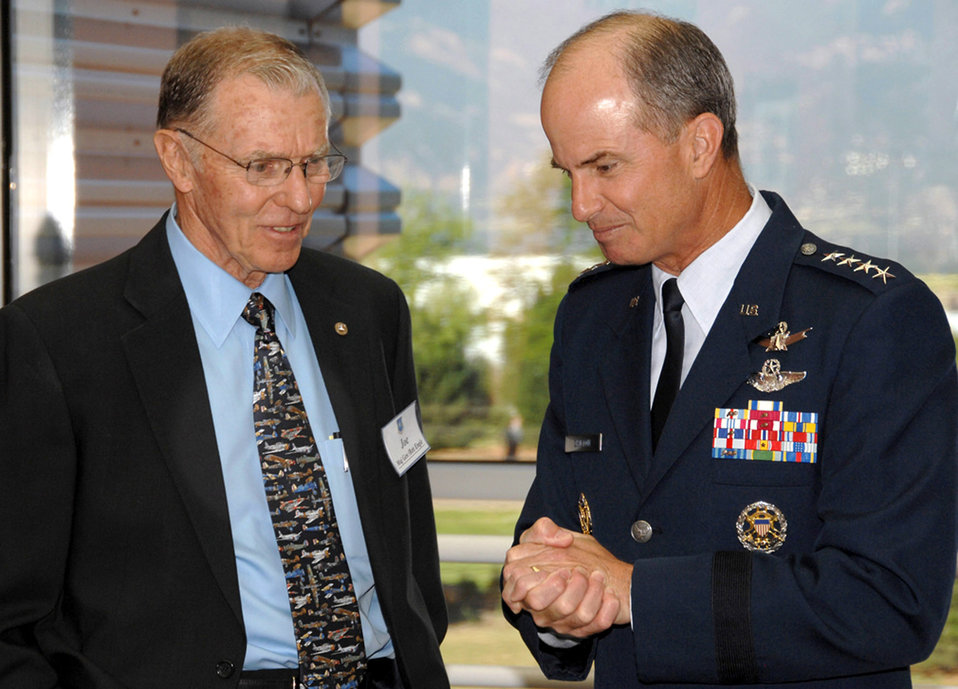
Legends inducted into Space, Missile Pioneers Hall of Fame

Gen. Kevin P. Chilton meets with retired Maj. Gen. Joe Engle before the Air Force Space and Missile Pioneers Hall of Fame induction ceremony Aug. 8 at Peterson Air Force Base, Colo. General Engle, who flew the X-15 experimental aircraft into space in 1965, and former Chief of Staff of the Air Force retired Gen. Lew Allen Jr. were honored for their contributions to Air Force space and missile programs. General Chilton is the commander of Air Force Space Command.